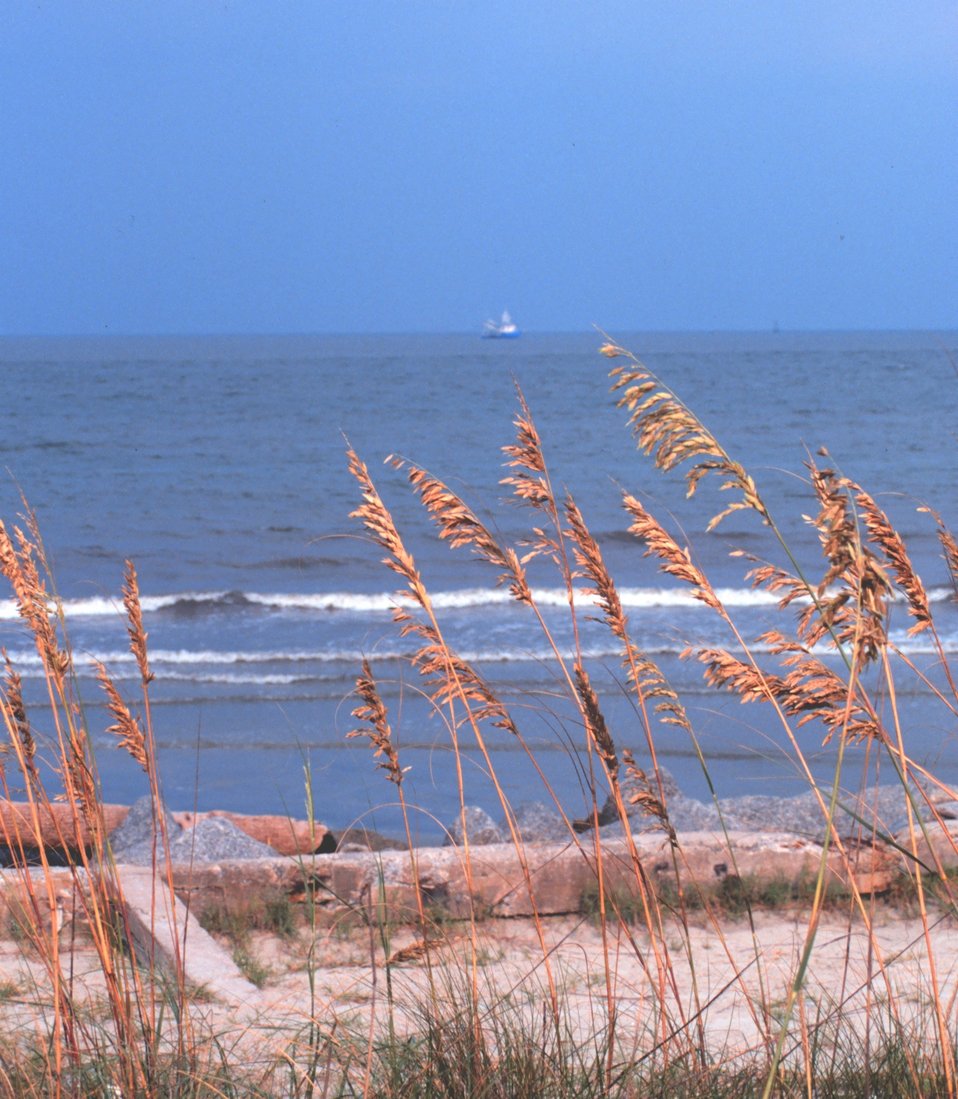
Looking through the sea oats to the Atlantic Ocean